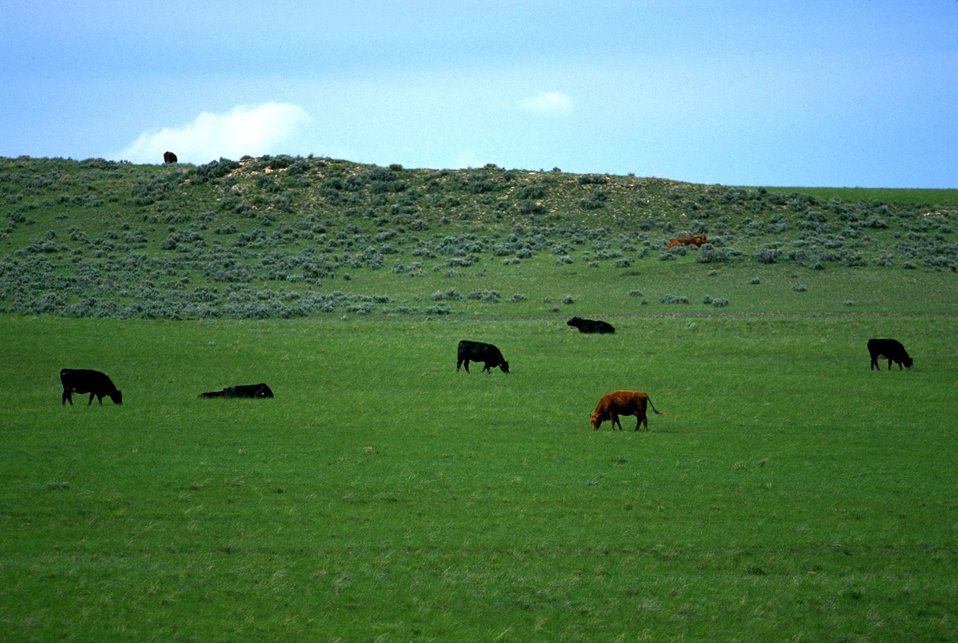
Cattle grazing on the prairies of Montana